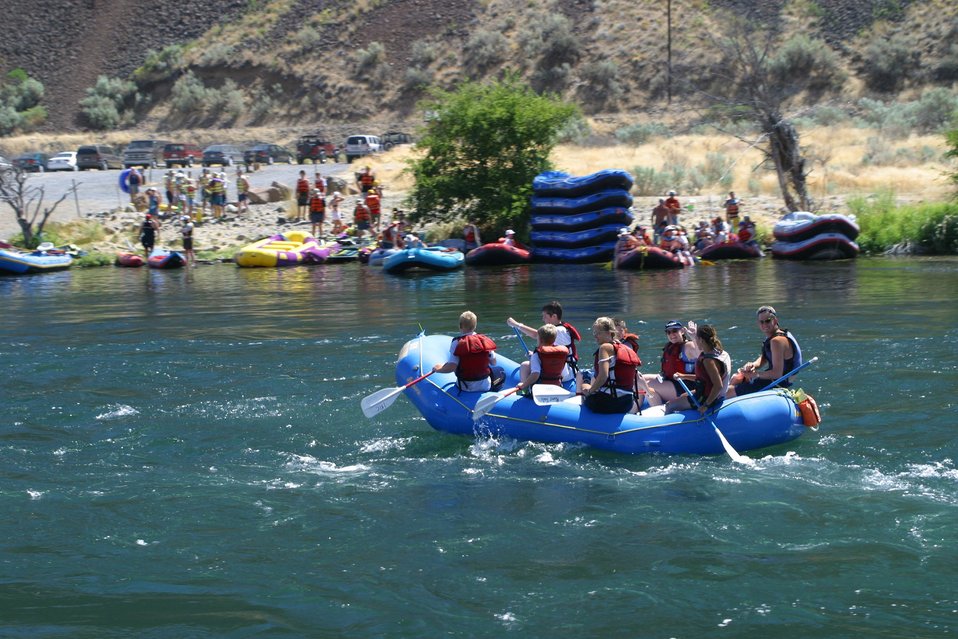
Over 200,000 people a year float the Lower Deshutes River.